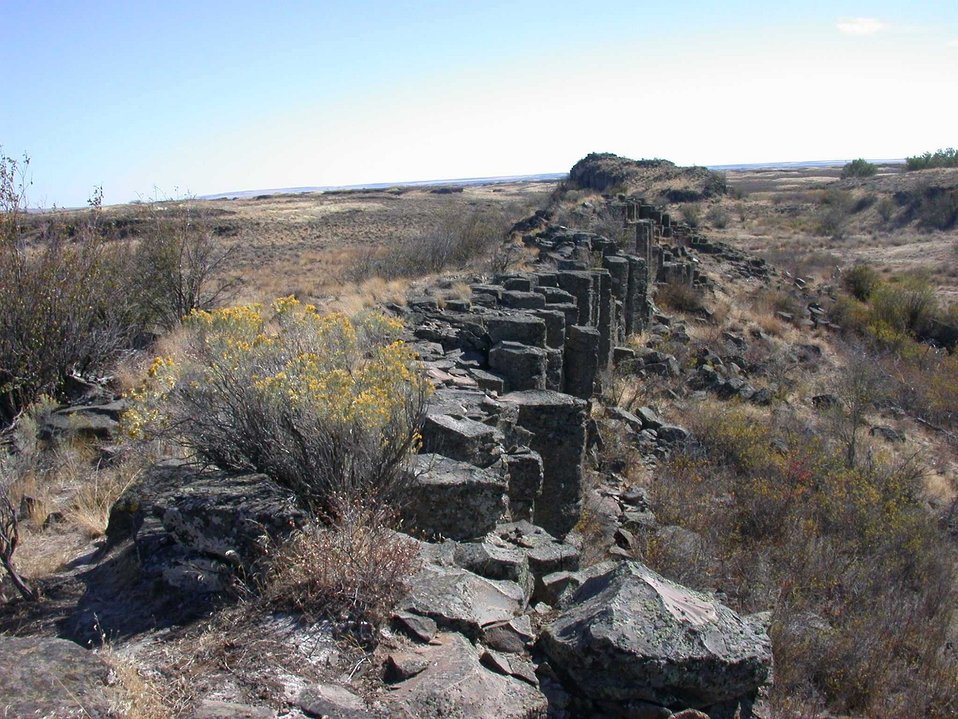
Public Lands Day Sprague geologic tour of columnar basalt ridge in Lake Missourla Flod Channels.